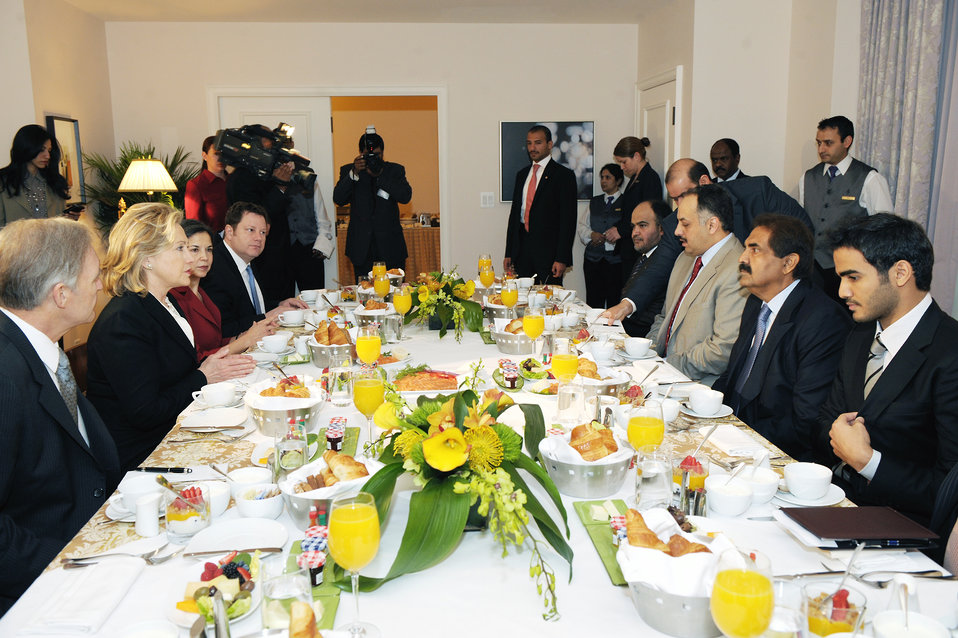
Secretary Clinton Meets With Qatari Amir Sheikh Hamad bin Khalifa al-Thani

U.S. Secretary of State Hillary Rodham Clinton meets with Qatari Amir Sheikh Hamad bin Khalifa al-Thani in Washington, D.C., on April 12, 2011.